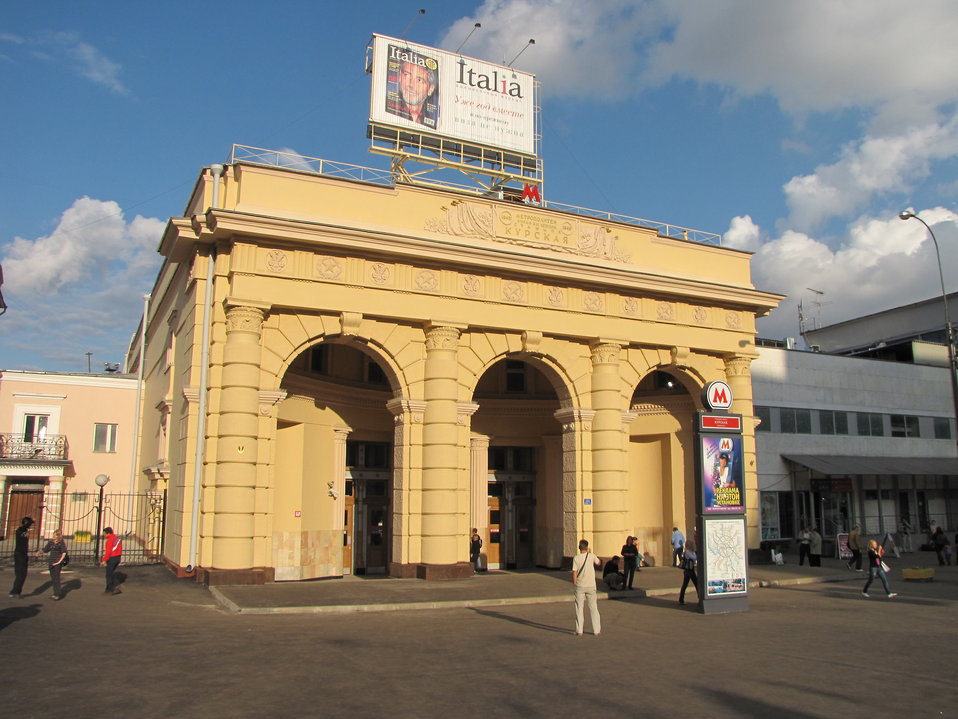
Русский: напоминает архитектуру Палладио